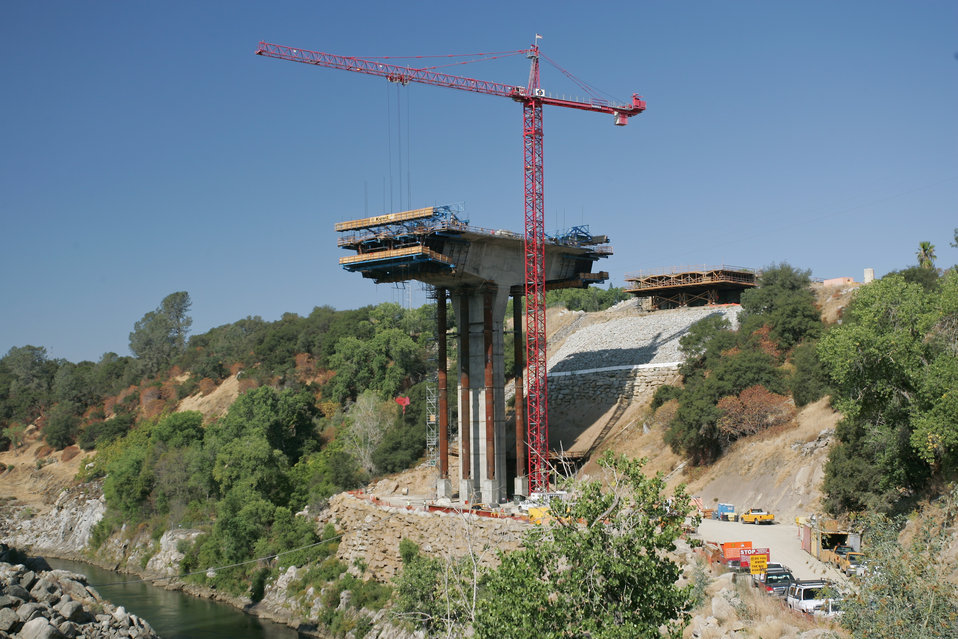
Folsom Lake Crossing Bridge Construction

FOLSOM, Calif. (Jan. 24, 2011) - A bridge segment reaches upward from its pier along the American River during construction of the Folsom Lake Crossing bridge here on July 24, 2008. The U. S. Army Corps of Engineers Sacramento District was authorized to build the bridge in 2004, after security concerns closed the road atop the dam, a major commuter throughway, in 2003. The Corps completed the bridge in March 2009.